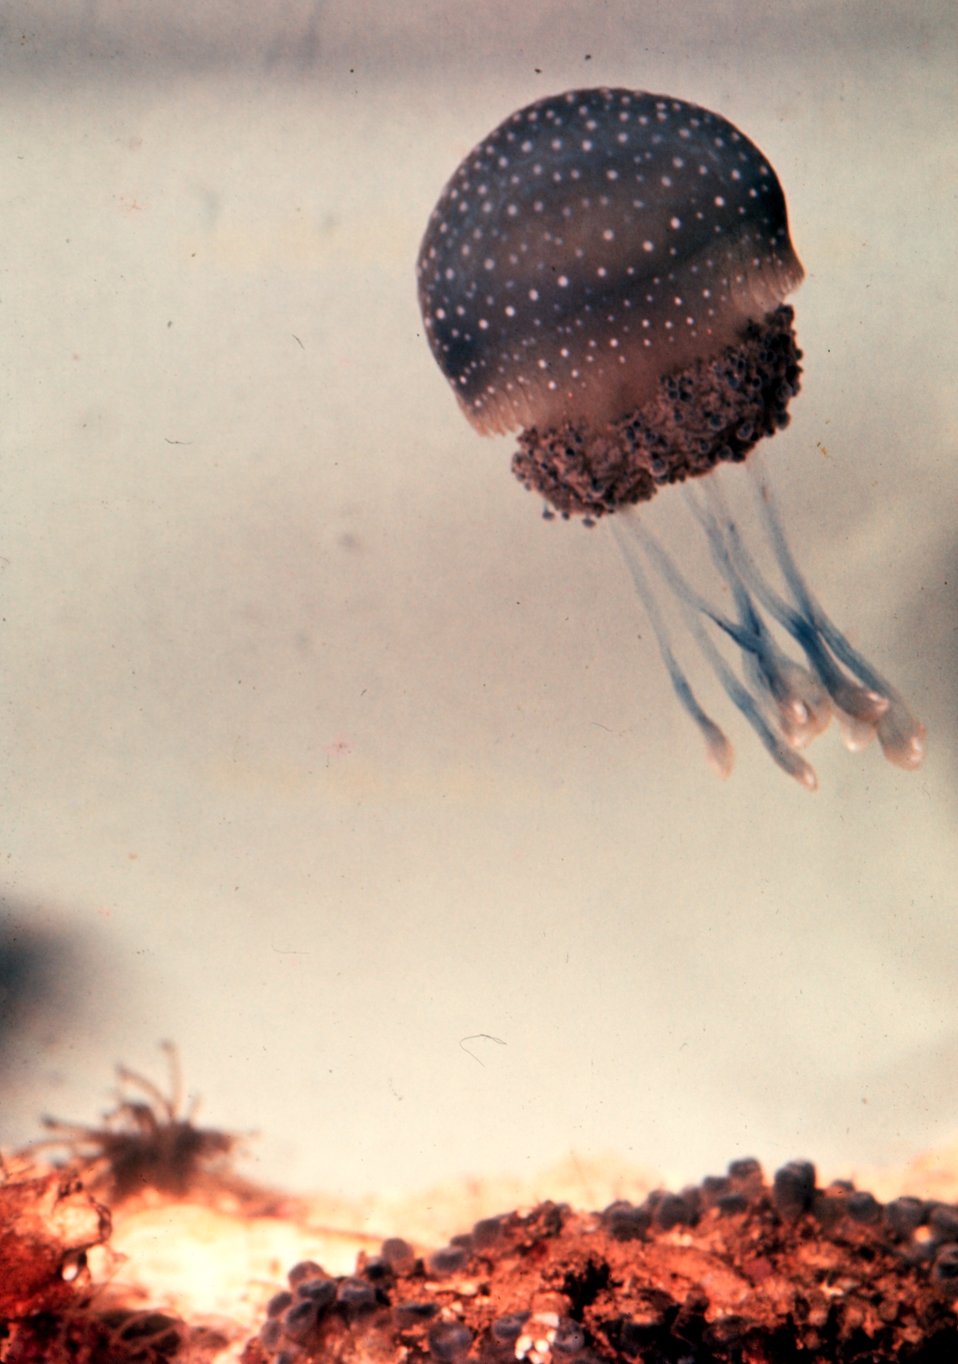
Jellyfish